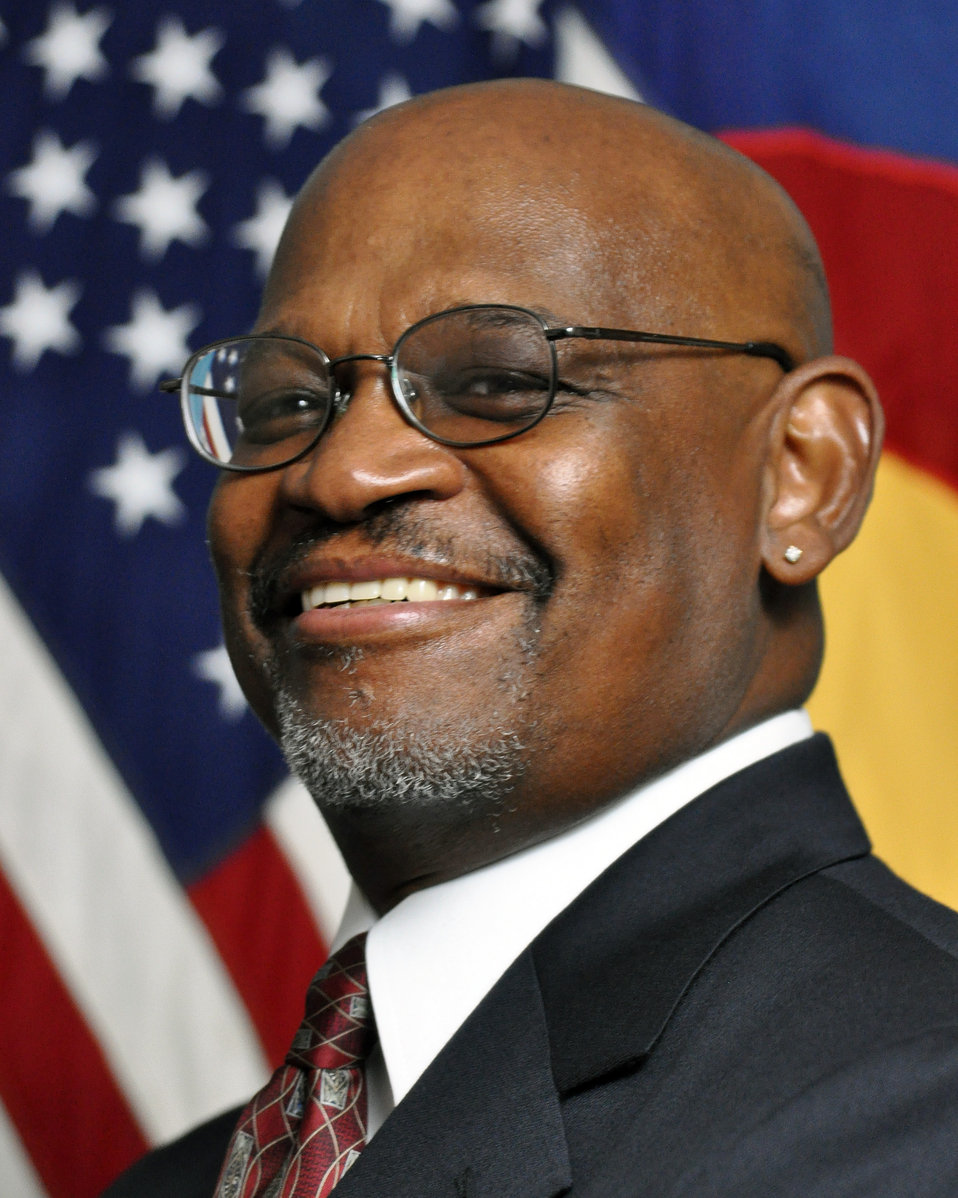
POW Medal awarded after 32 years

Retired Master Sgt. James O'Neal Hughes smiles for an official photo. Hughes was held in captivity for 16 days by Iranian militants inTehran, Iran, on Nov. 4, 1979. Hughes is a staff assistant at Fort Logan National Cemetery in Denver, Colo.